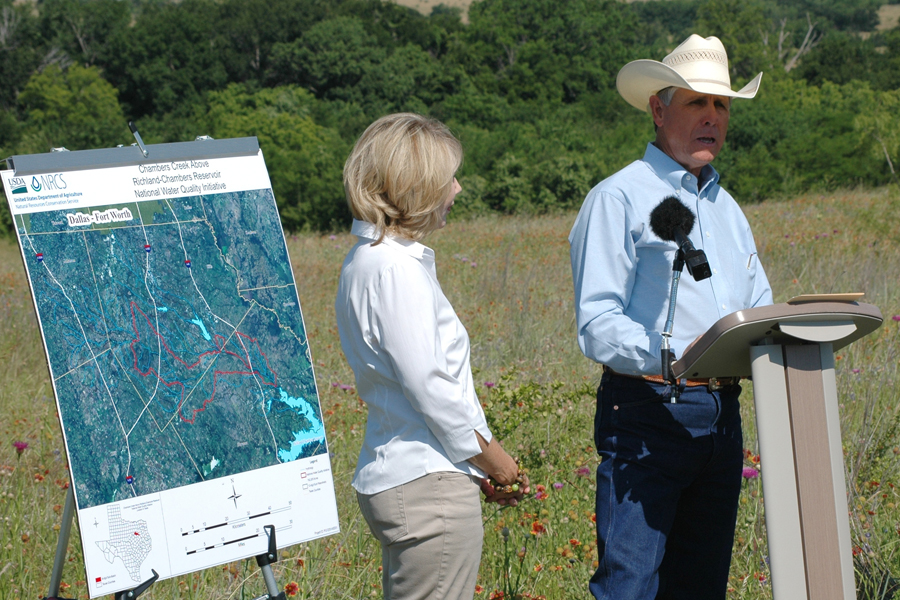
Gary talking

Texas ranchers Sue and Gary Price have been working with the U.S. Department of Agriculture’s (USDA) Natural Resources Conservation Service (NRCS) and the Navarro Soil and Water Conservation District for over 35 years to implement conservation practices on their ranch which lies in the Trinity River Basin, an area that provides water for over 40 percent of Texans. USDA NRCS launched the National Water Quality Initiative with $33 million dedicated for farmers and ranchers, with financial assistance for any size agriculture operation to help reduce the loss of excess nutrients and sediments from their fields. USDA photo.ary, right, and Sue Price have been implementing conservation practices for more than 35 years they on their '77 Ranch' and they have submitted an application for the new national water quality initiative.